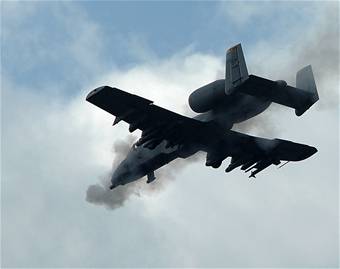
Airpower Summary

To defeat a wide variety of targets, A-10 Thunderbolt IIs can employ conventional munitions that include general purpose bombs, laser guided bombs, joint direct attack munitions, Maverick and Sidewinder missiles, rockets, illumination flares and the GAU-8/A 30mm cannon, capable of firing 3,900 rounds per minute.